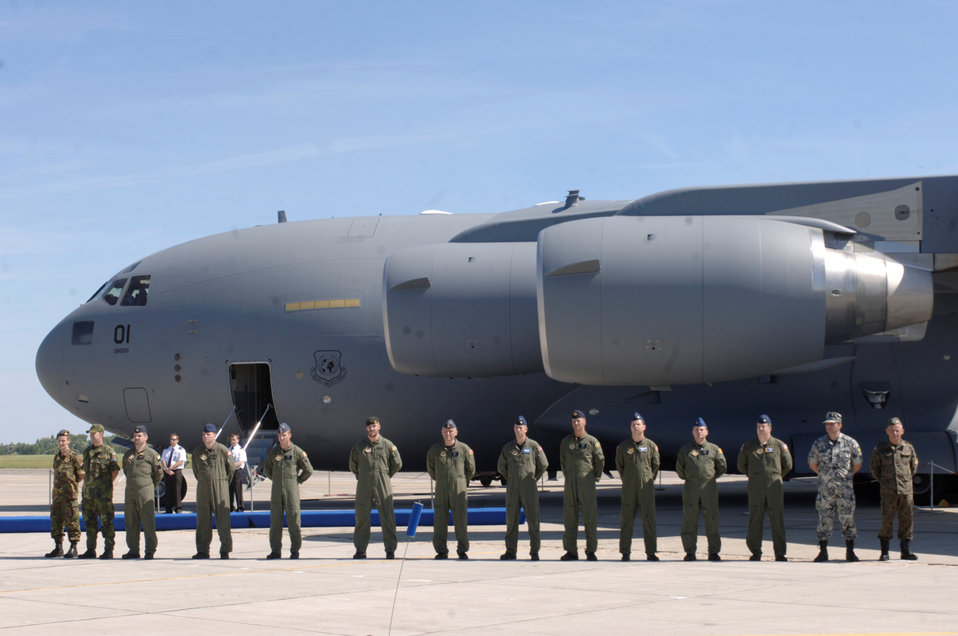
12 nations activate groundbreaking heavy airlift wing

Airmen representing the 12 partnering nations take part in the activation ceremony of a first-of-its-kind multinational heavy airlift wing at Papa Air Base, Hungary. The ceremony celebrated the efforts of the 12 nations who, during the last 10 months, stood up the organization that will provide strategic airlift worldwide for humanitarian, disaster relief, and peacekeeping missions in support of the European Union, United Nations and NATO.